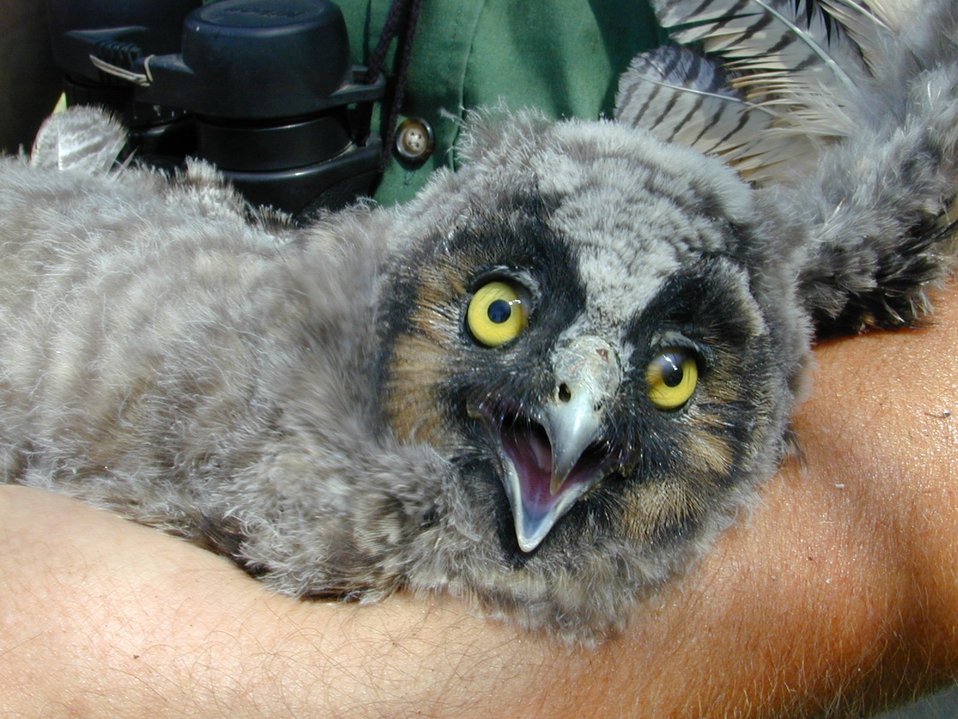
Environmental Education Fire Workshop Timberline High School Fall 2000